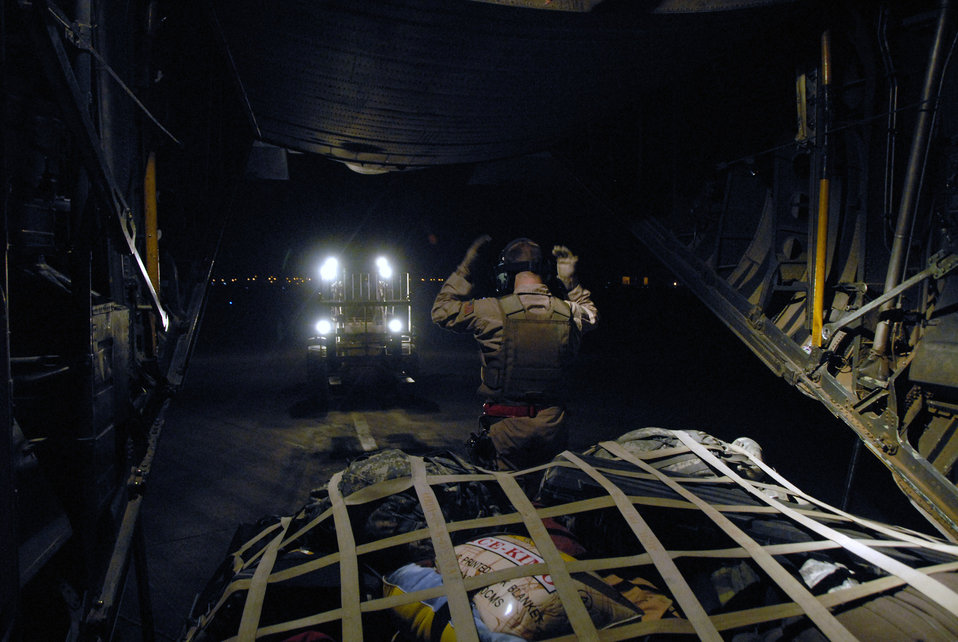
Special delivery

Senior Airman Joel Pfaff martials in Airman 1st Class Bryan Rogers during a passenger and cargo download/upload mission May 13 at an air base in Iraq. Airman Pfaff is a C-130 Hercules loadmaster with the 737th Expeditionary Airlift Squadron deployed from Dyess Air Force Base, Texas, and Airman Rogers is an aerial porter from the 447th Air Expeditionary Group deployed from McGuire AFB, N.J.